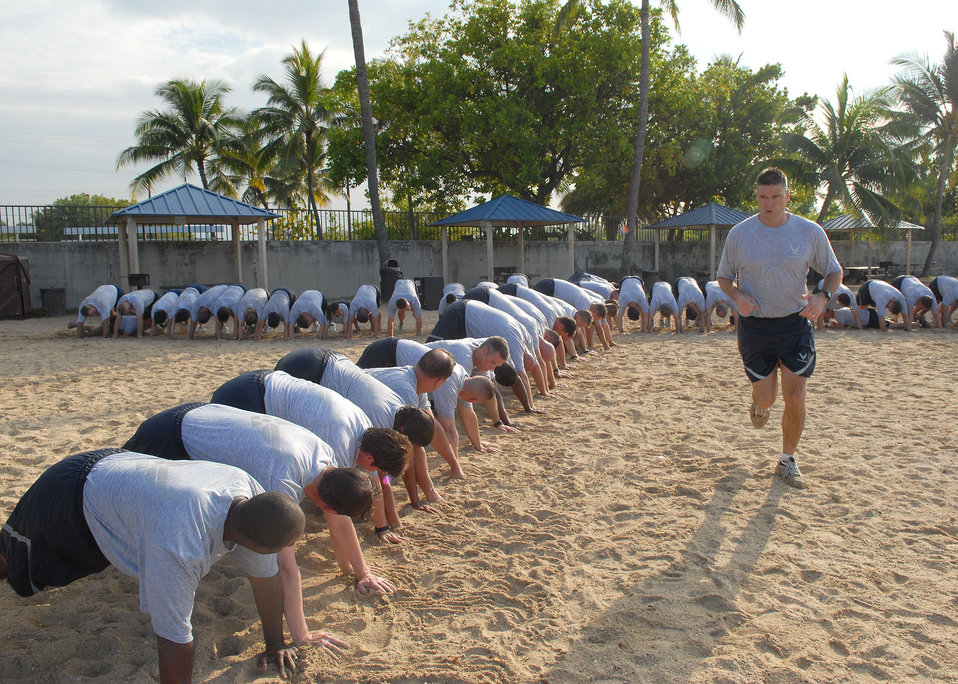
Beach workout

Chief Master Sgt. Scott Delveau, Pacific Air Forces first sergeant, leads the formation of a